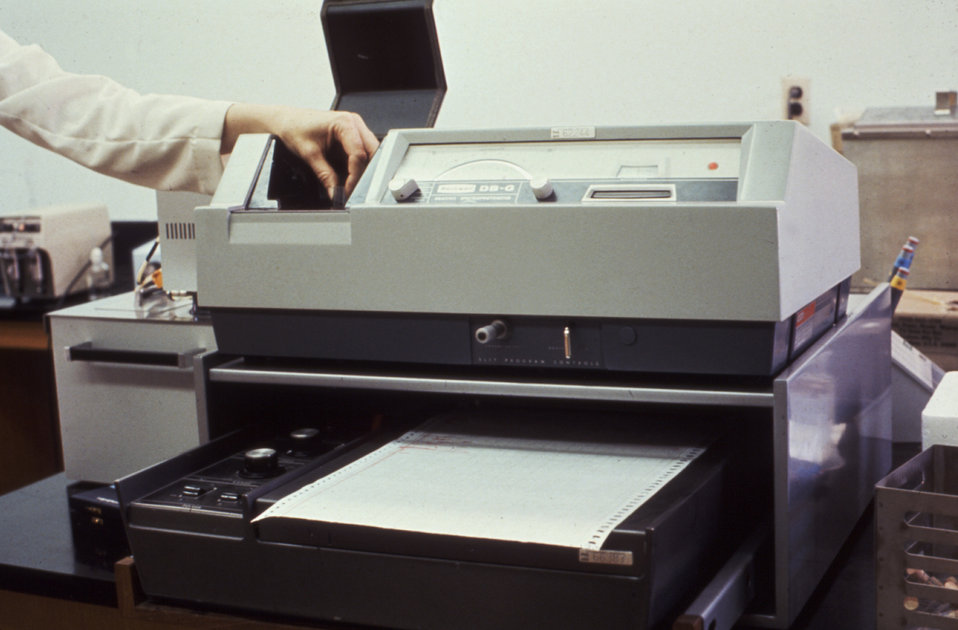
This is a photograph of a laboratorian working with a Beckman DGB Spectrophotometer.